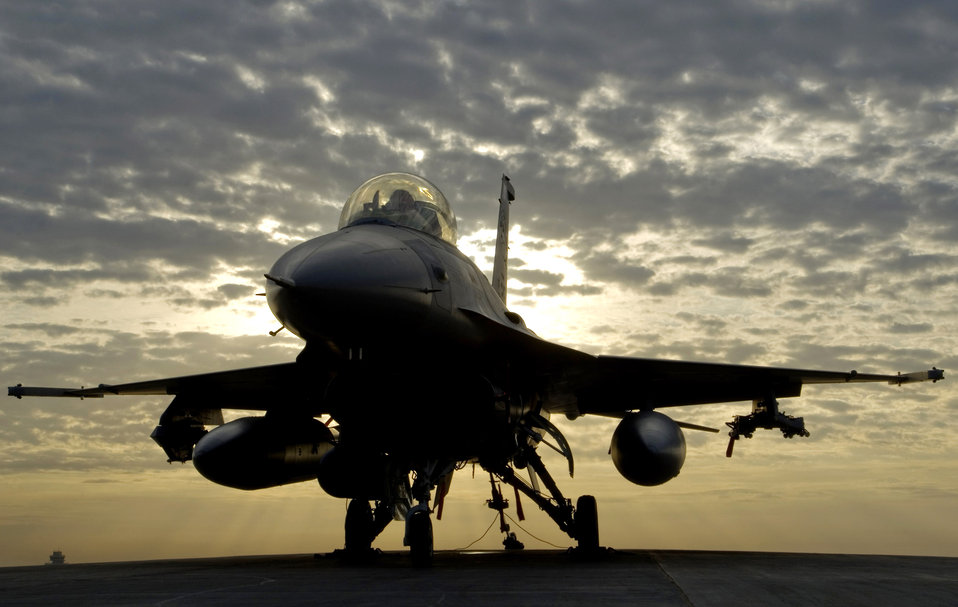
Let's go

In the early morning of Dec. 31, an F-16 Fighting Falcon sits on the hot cargo pad at Joint Base Balad, Iraq. The aircraft is tethered to secure it in place before a full afterburner engine run-up.